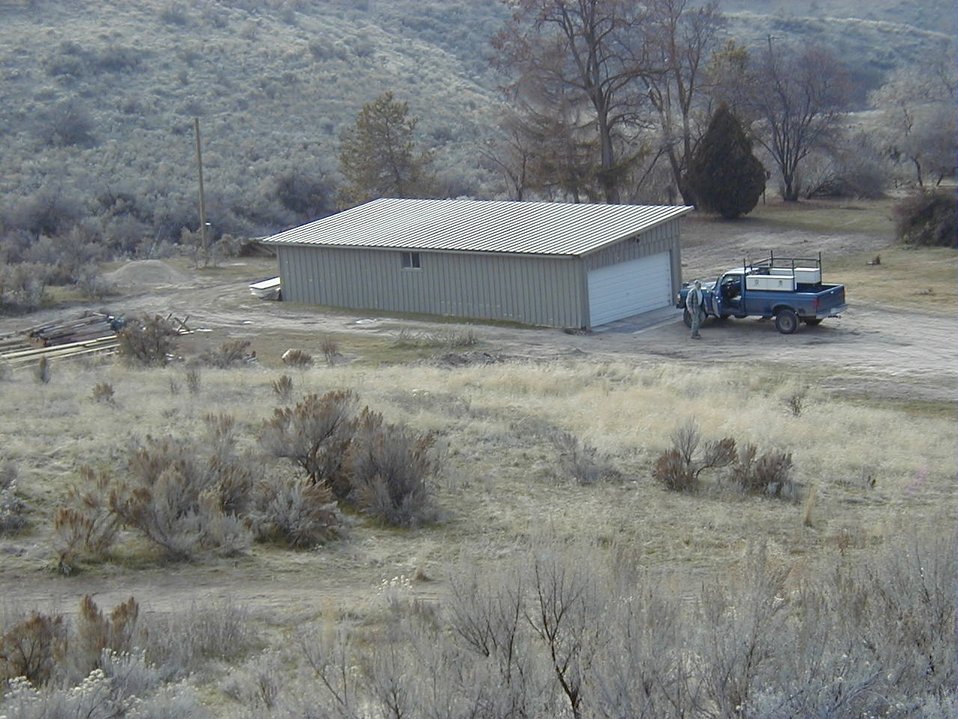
Environmental Education McCord house Boise Front Foothills Fire Safety and Urban interface Four Rivers Field Office LSRD Lower Snake River District